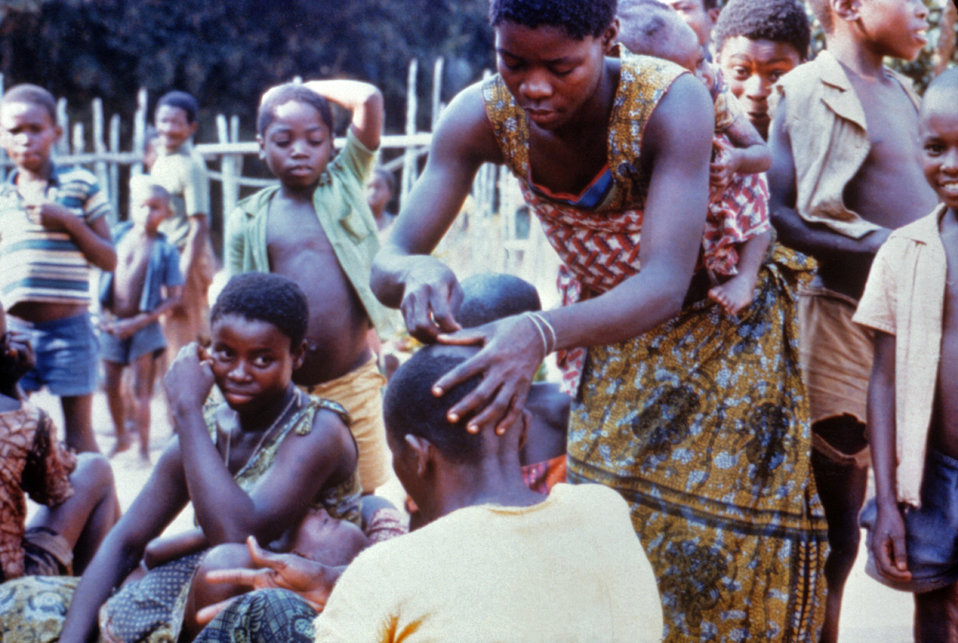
This healthcare practitioner was examining the scalp of a local inhabitant for the presence of head lice, Pediculus humanus var. capitis, which can be diagnosed by looking closely through the hair and scalp for this organism in any of its three developmental stages: nits (eggs), nymphs, or adults.